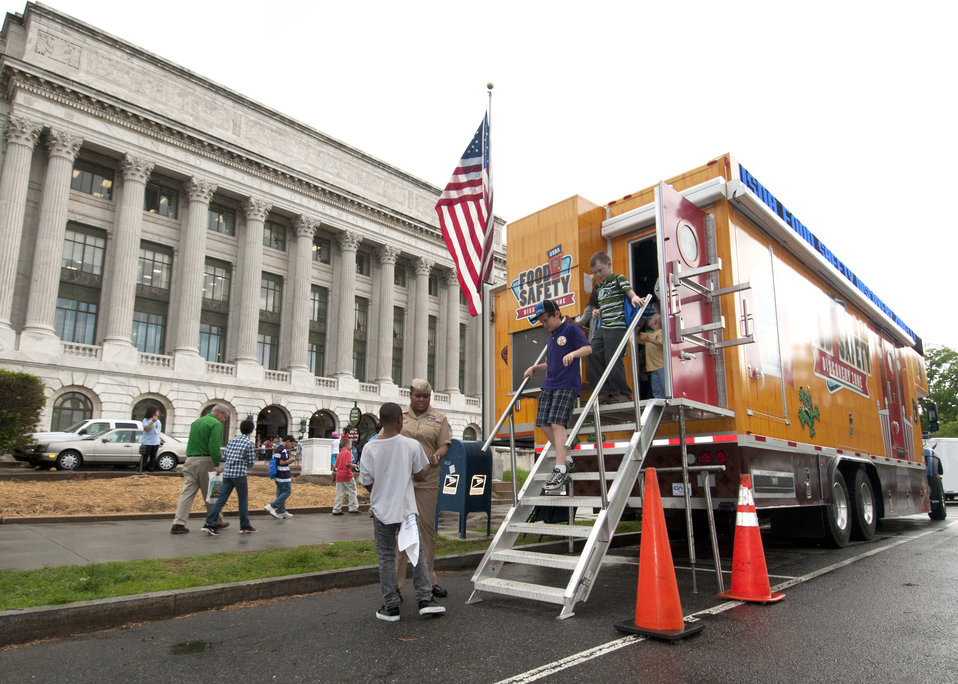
Young people tour through the Food Safety Discovery Zone mobile truck. This vehicle is a 40-foot truck that features several hands-on, interactive activities, cool lighting and sound effects, and eye-catching educational tools to teach folks about the four easy steps that families can take to avoid food borne illness. The truck was parked in front of the U. S. Department of Agriculture (USDA) as part of USDA’s “Take Your Child to Work Day” event held in Washington, DC, on Thursday, April 28, 2011.